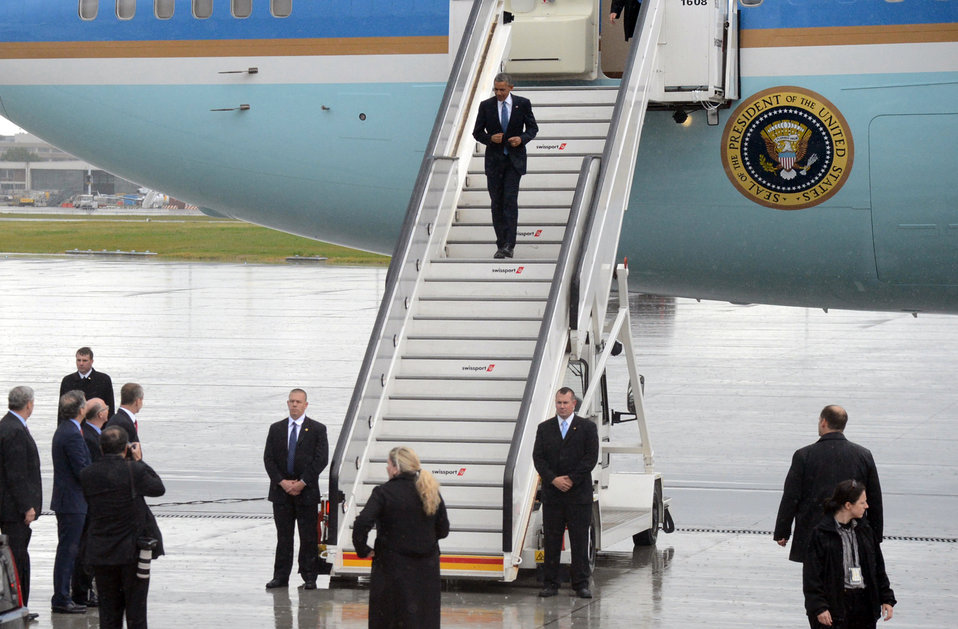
President Obama Arrives in Belgium

U.S. President Barack Obama arrives at Melsbroek Air Base outside of Brussels, Belgium, on June 4, 2014.